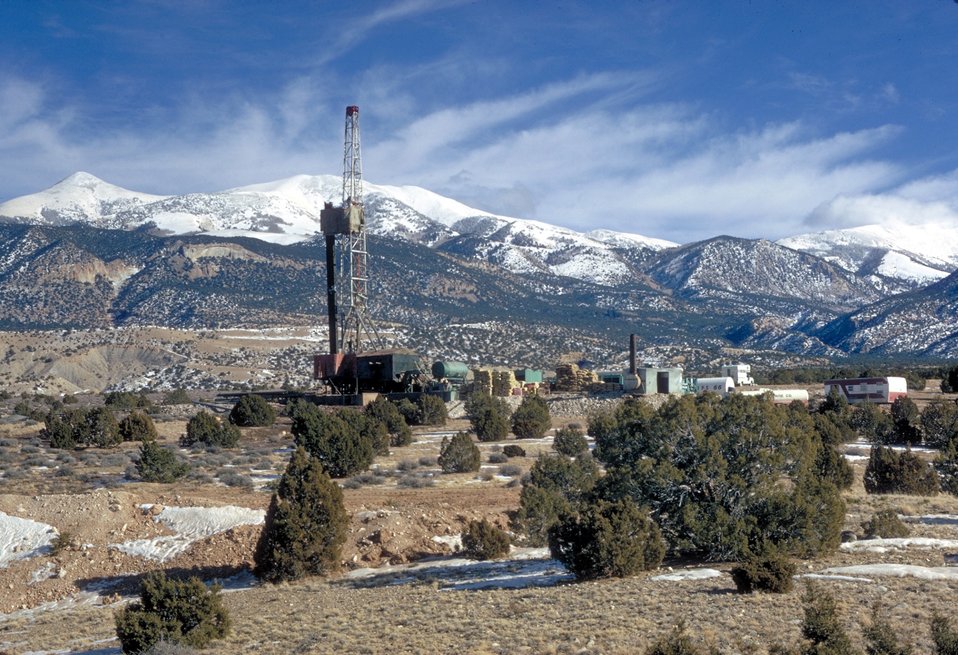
Drilling for coal bed methane near Price, Utah.